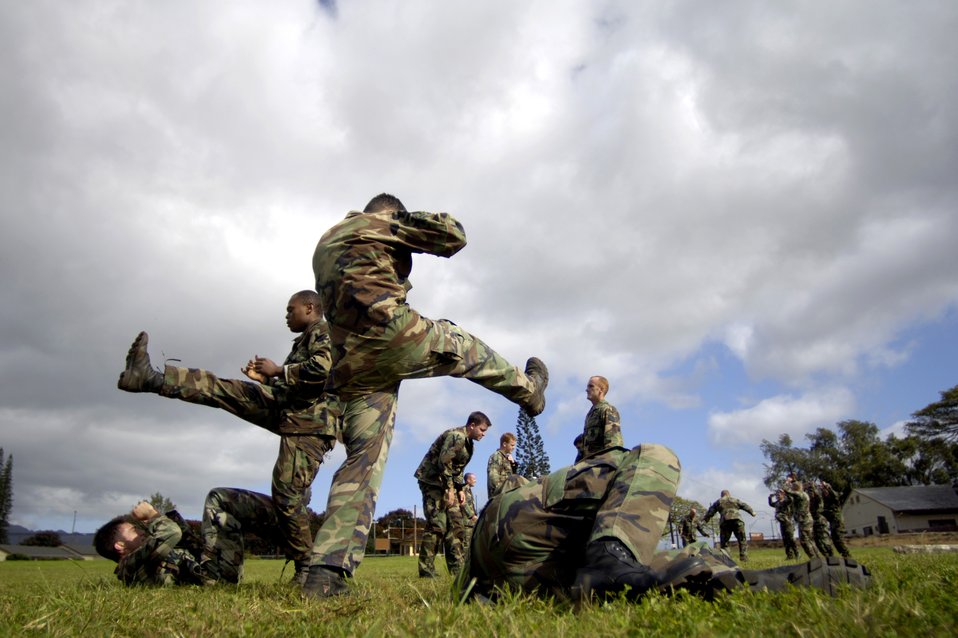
Close-combat skills

Tactical air controllers from the 25th Air Support Operation Squadron practice close-combat skills training Thursday, April 13, 2006, at Wheeler Army Air Field, Hawaii.